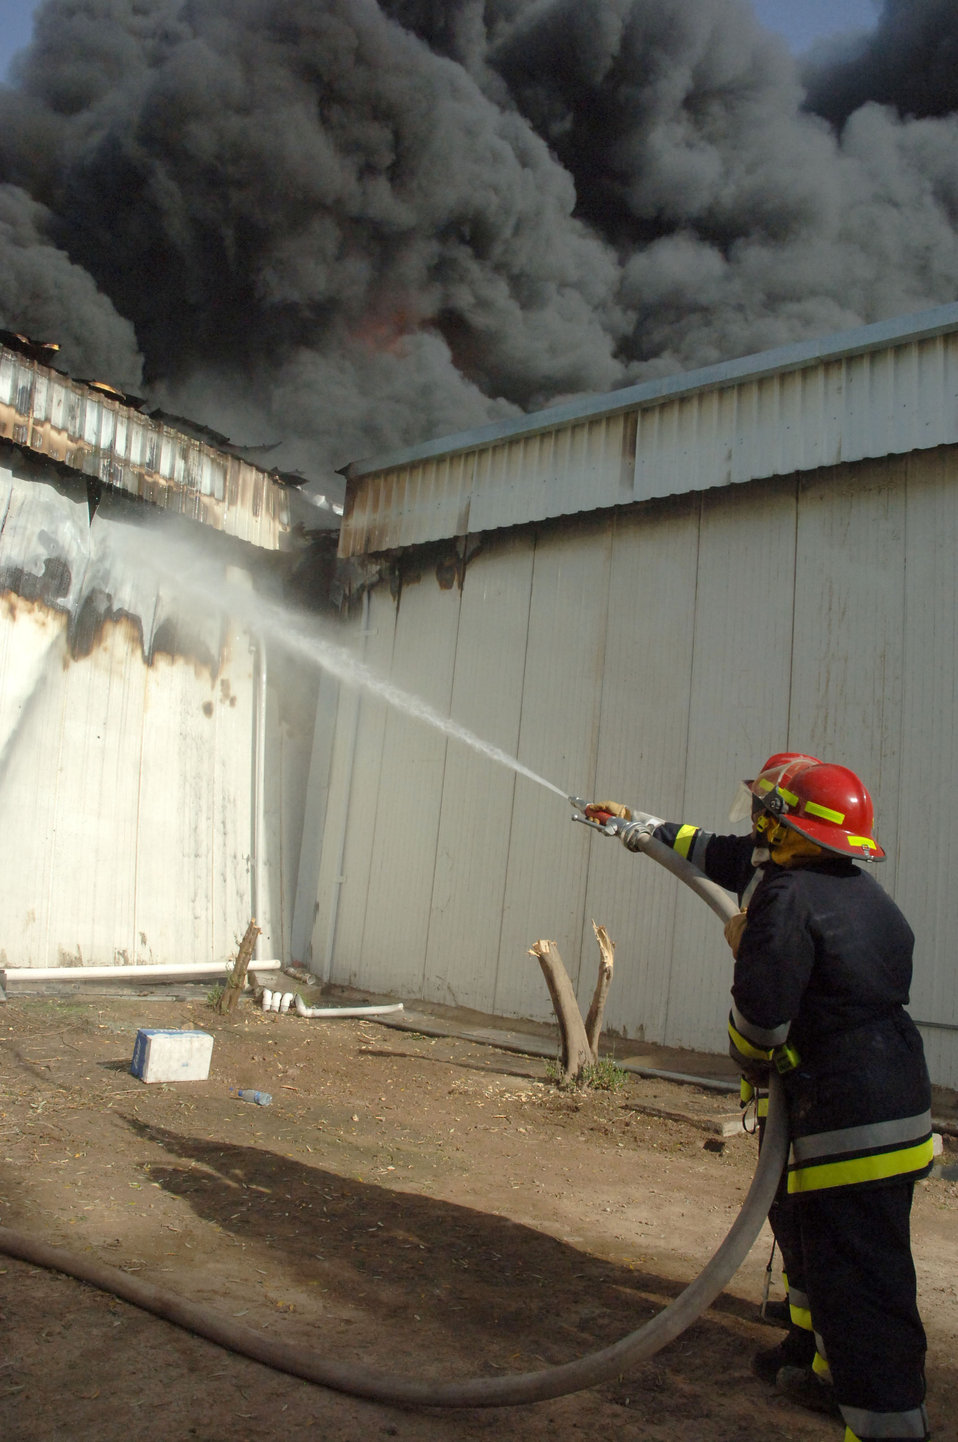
Five-alarm blaze

Iraqi firefighters battle a five-alarm blaze at a weapons training facility at Victory Base Complex, Iraq, March 11, 2006. U.S. and Iraqi firefighters saved half of the facility, including an indoor firing range.